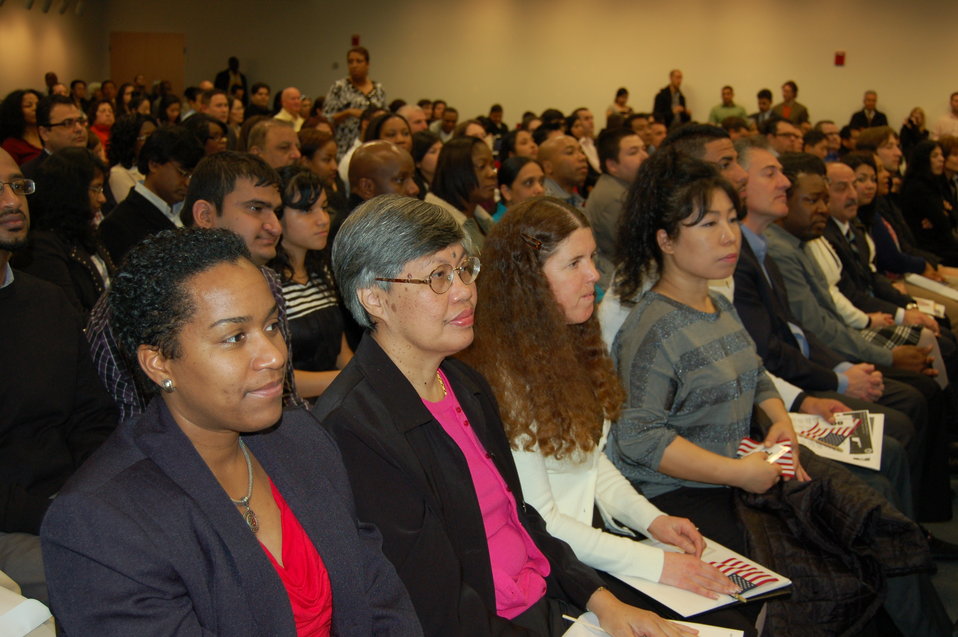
Naturalization Ceremony